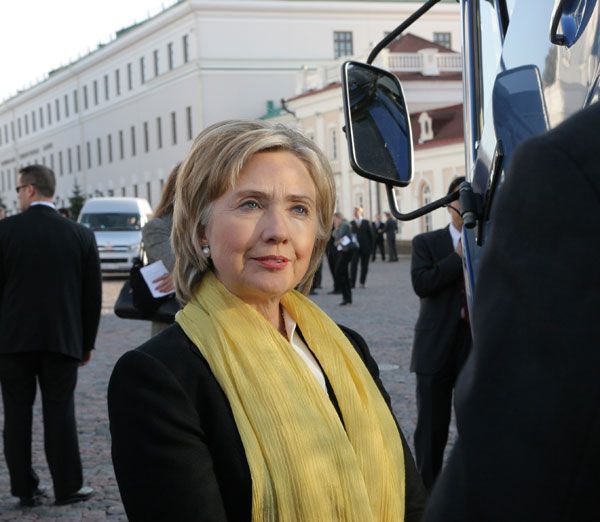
Secretary Clinton in Tatarstan

U.S. Secretary of State Hillary Rodham Clinton learns about the Kamaz-Cummins truck production line in Tatarstan, Russia, October 14, 2009.